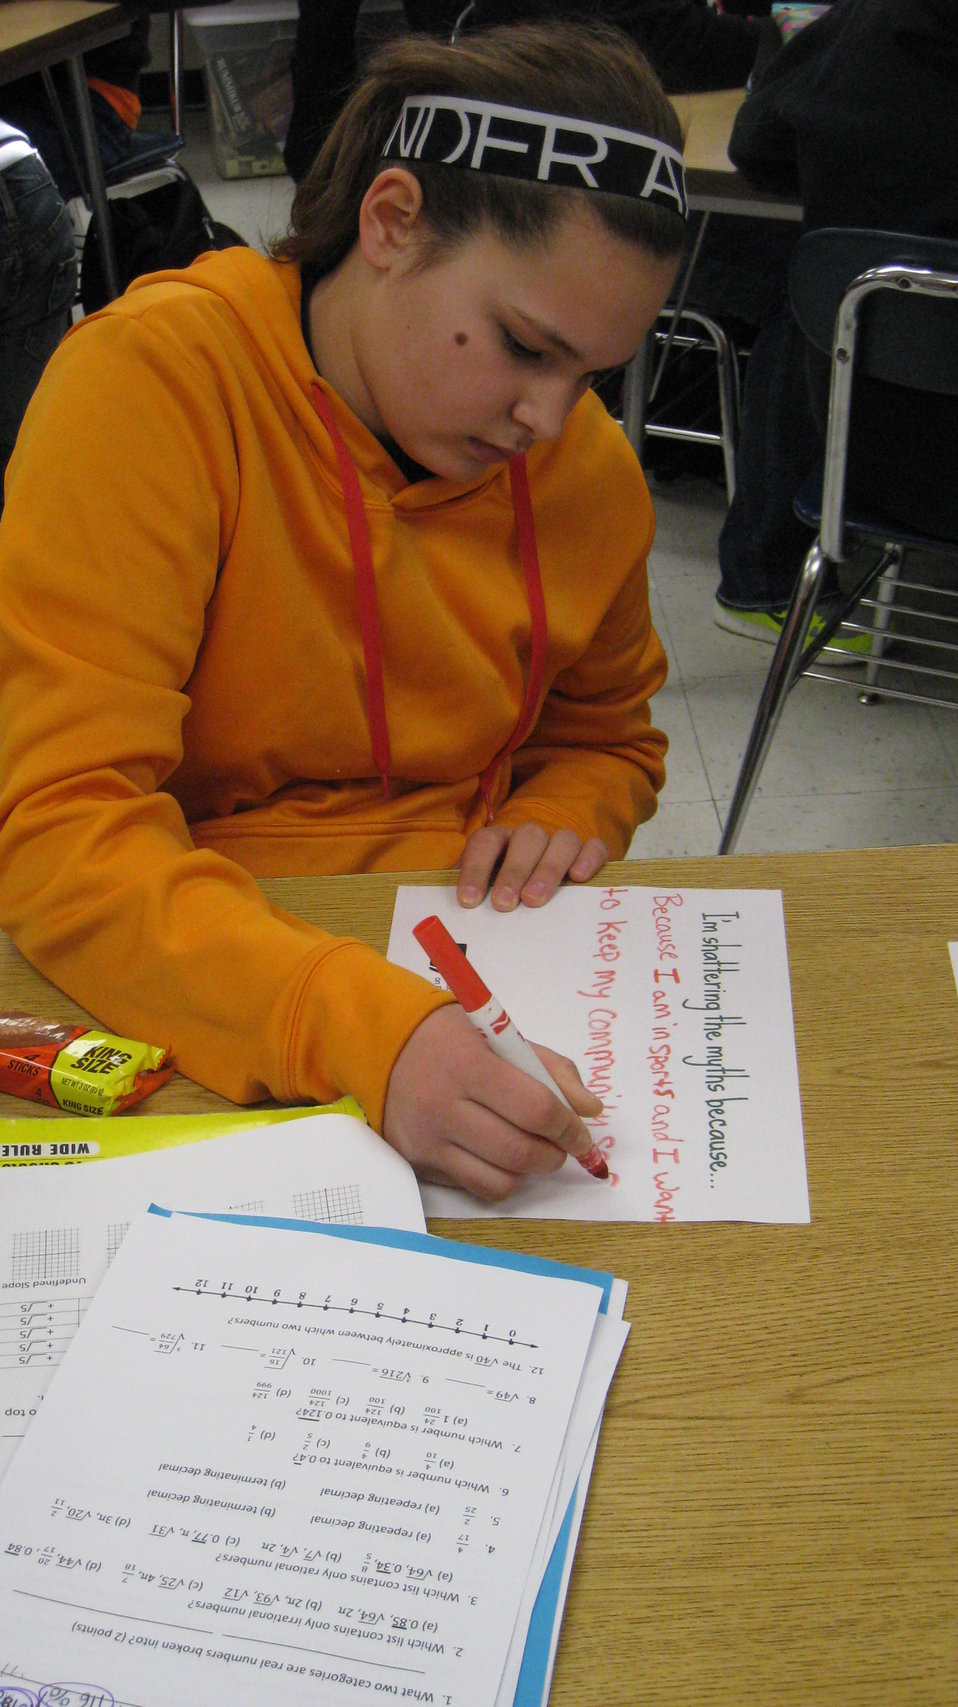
I'm Shattering the Myths Because...

Teenagers from the Van Buren County SAFE Coalition's, Youth Leadership Council (YLC) in Keosauqua, Iowa participate in various events during National Drug Facts Week, 2014.